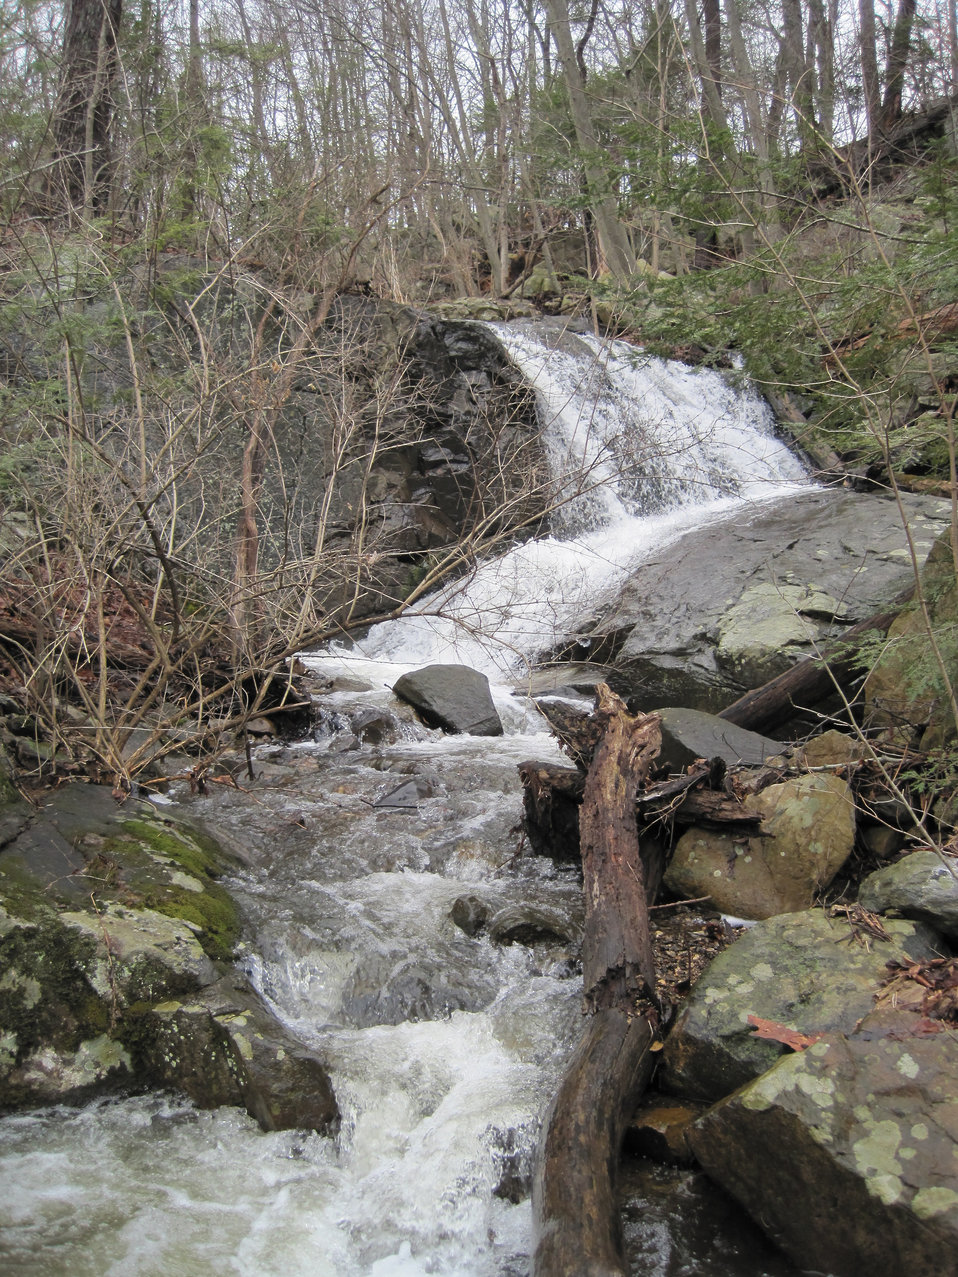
Photo of the Week - Waterfall (NJ)

Photo of the Week - 11/19/12

Waterfall along the Dagmar-Dale Trail at Wallkill River National Wildlife Refuge in New Jersey.